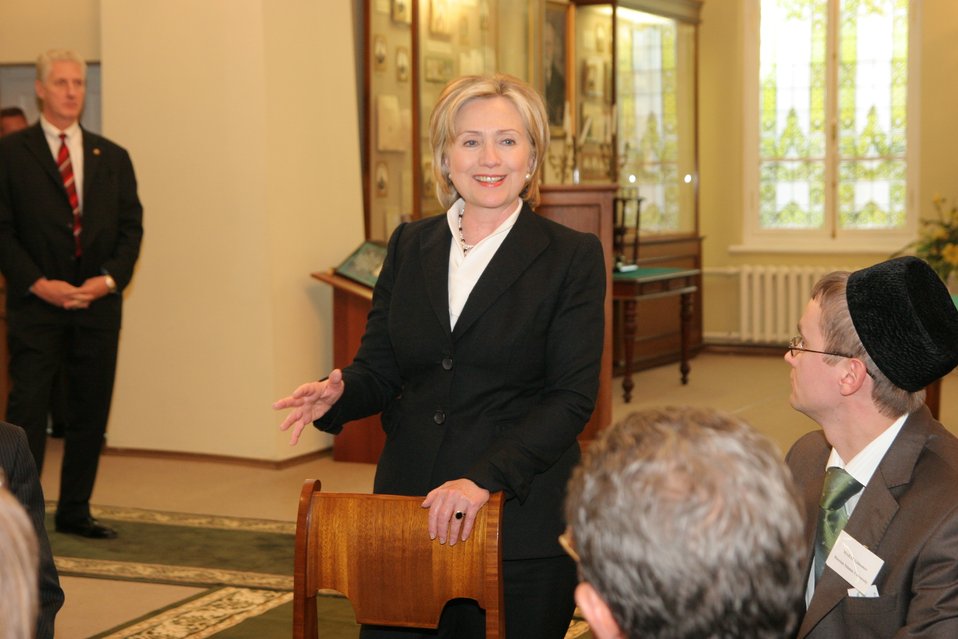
Secretary Clinton at Kazan State University

U.S. Secretary of State Hillary Rodham Clinton speaks to students and community leaders at Kazan State University in Kazan, Russia October 14, 2009.